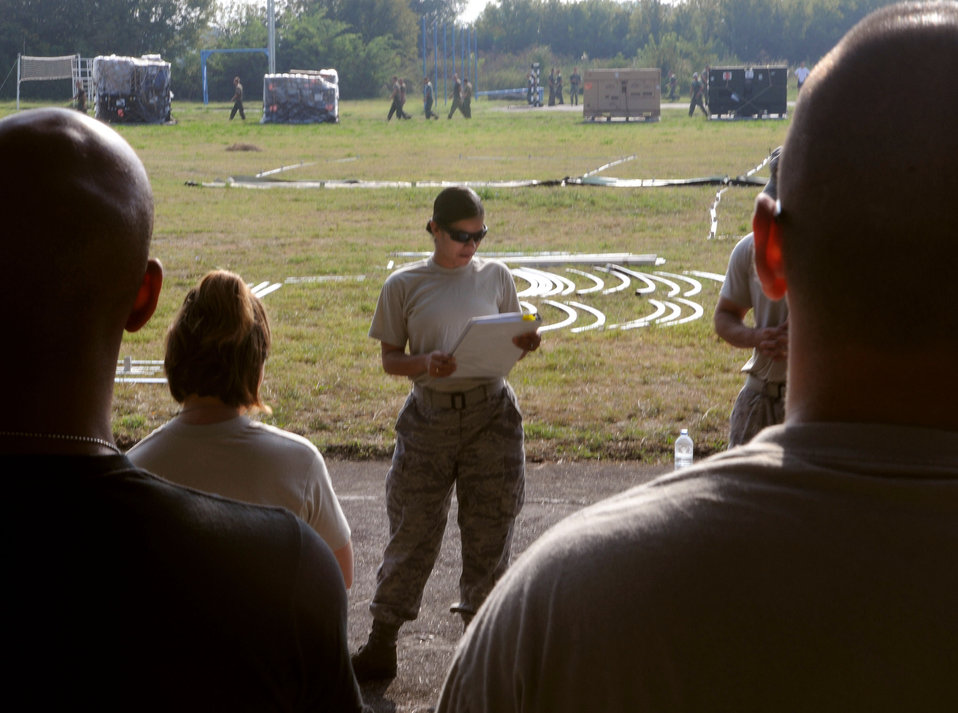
Airmen stand up medical squadron to support training exercise

Staff Sgt. Melanie Hernandez briefs Airmen on the plan to set up tents for a mobile hospital Sept. 1, 2009, in Nis, Serbia. Fifteen nations participated in the exercise. Sergeant Hernandez is assigned to the 458th Expeditionary Medical Squadron.